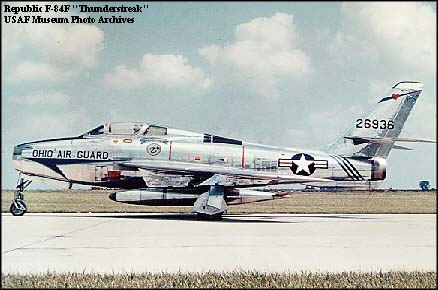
F-84F Thunderstreak

1950's -- F-84F Thunderstreak. Courtesy photo.